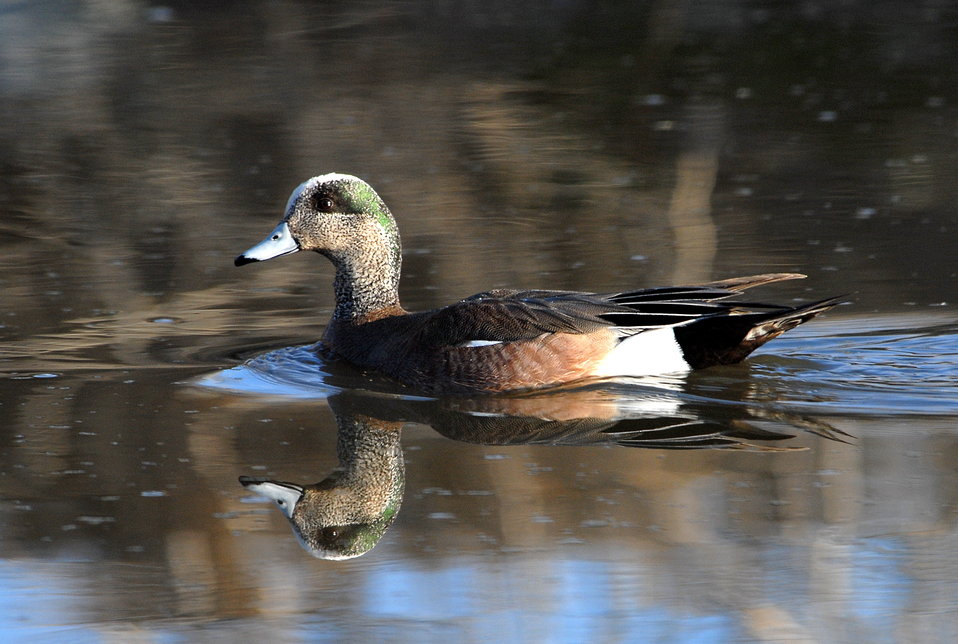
American Wigeon (male)